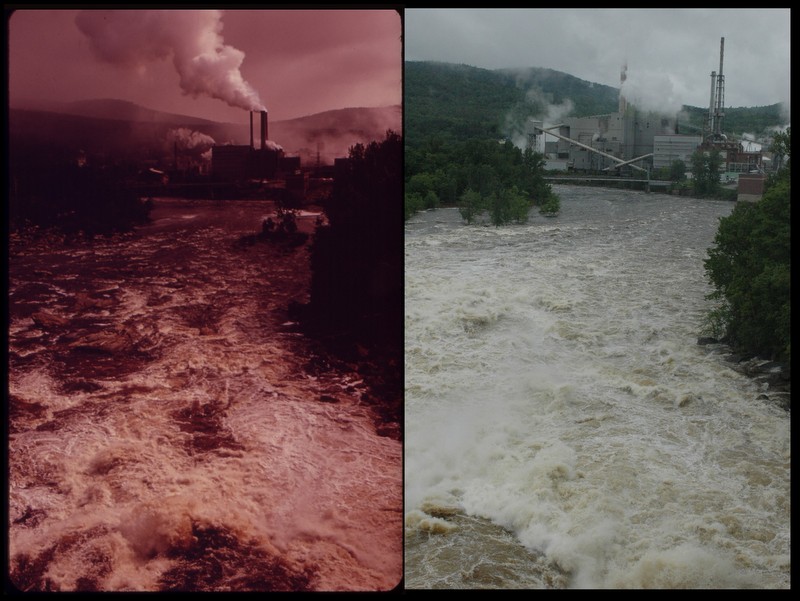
Androscoggin River, Rumford-Mexico, ME 1973 and 2012

'Then' Documerica Photo: June, 1973 Oxford Paper Company Mill Viewed from the Bridge Across the Androscoggin River Connecting the Towns of Rumford and Mexico by Charles Steinhacker.

June, 2012, NewPage Paper Mill, Rumford, Maine by Victoria Hampshire.

Join the project at www.flickr.com/groups/ourenvironment